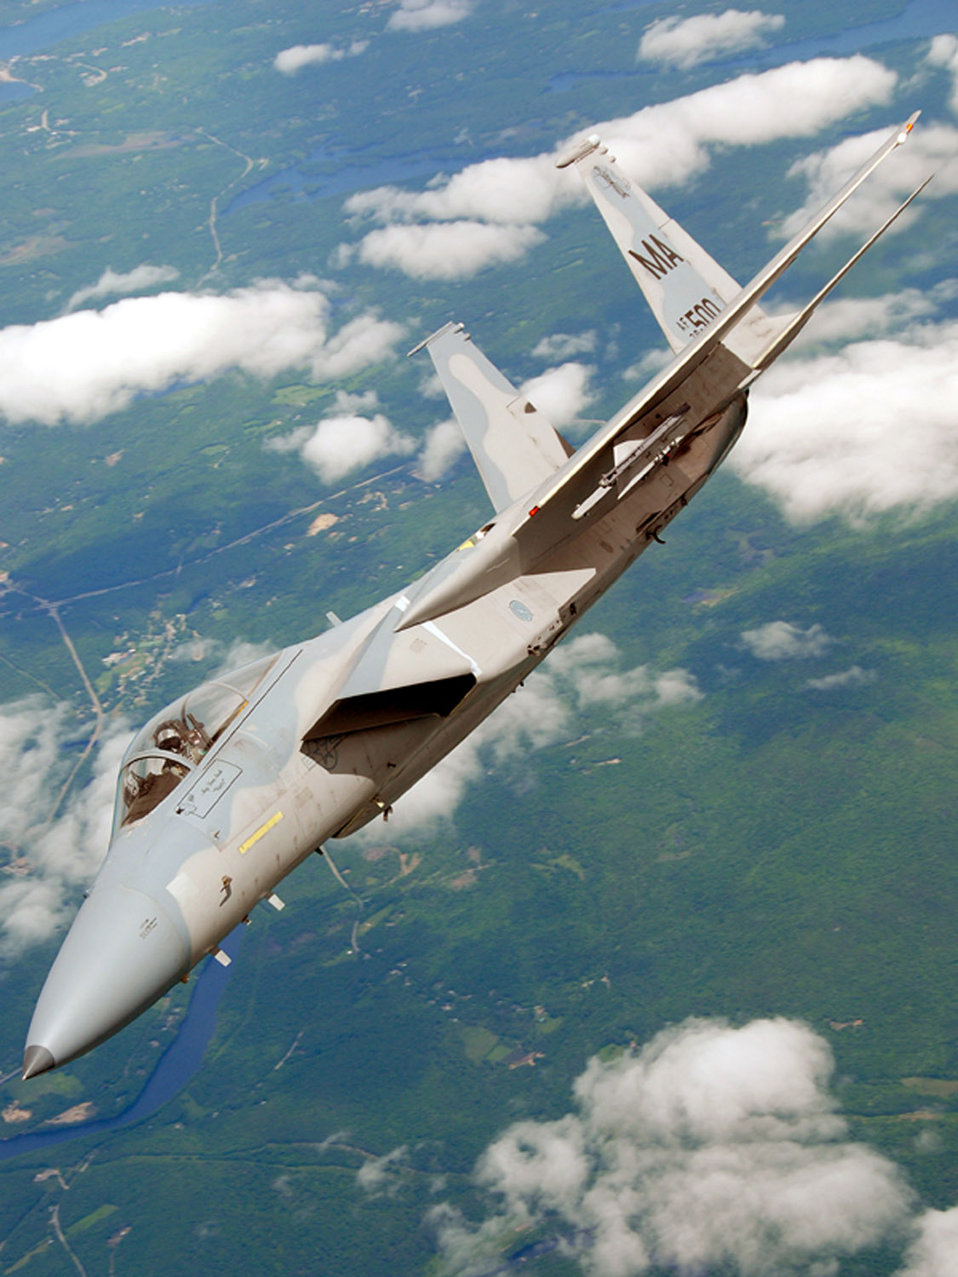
Air Force Week New England kicks off at Pease Air National Guard Base

An F-15 Eagle from Otis Air National Guard Base, Mass., breaks off after refueling during a special event held June 6 to promote Air Force Week New England which will take place in August.